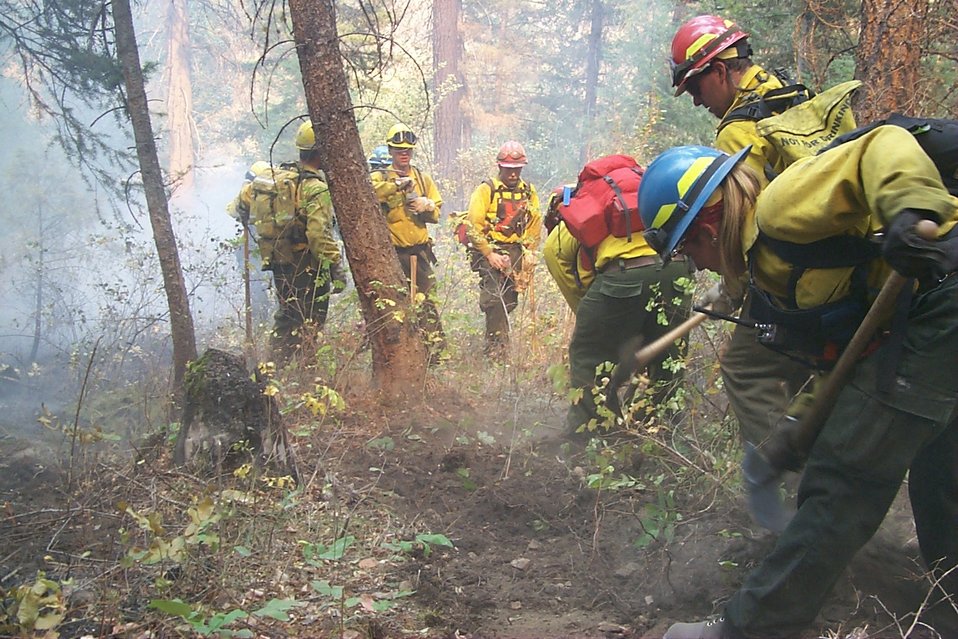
Line crew Fire Clearwater Fire Salmon Field Office USRD Upper Snake River District